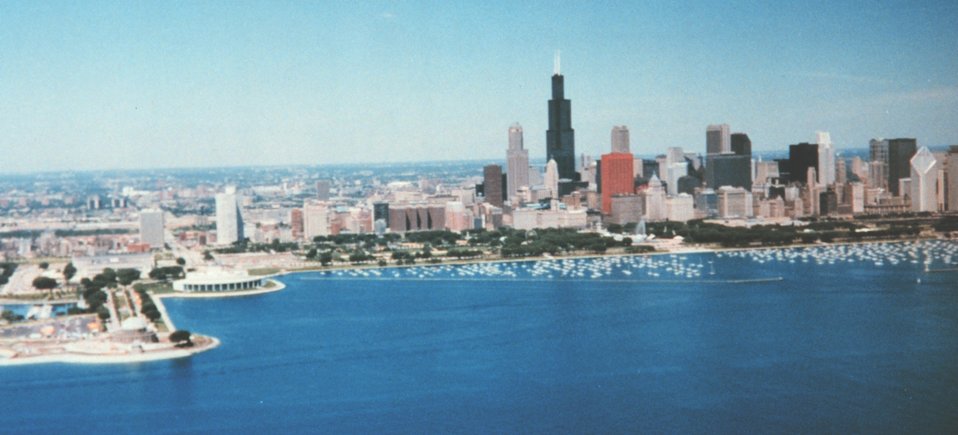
Chicago as seen during Lake Michigan SHOALS Lidar survey